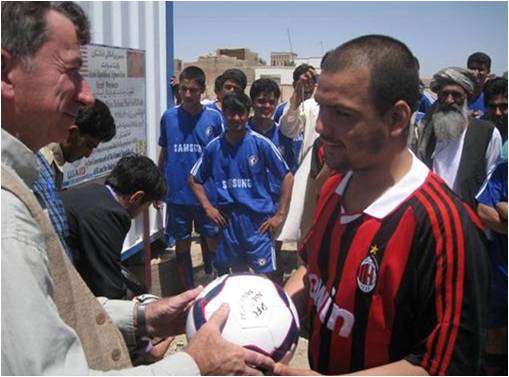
A Year Ago Siashwan was Closed Off; Today It's Soccer Central